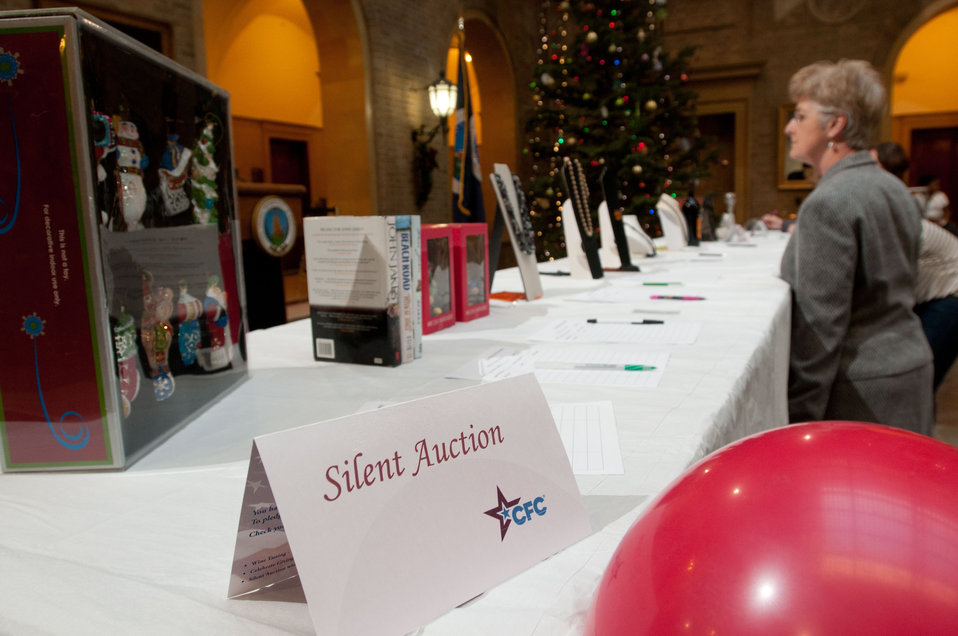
People consider items available at the silent auction, during the Combined Federal Campaign (CFC) fundraiser at the U.S. Department of Agriculture (USDA) headquarters, on Monday Dec. 3, 2012, in Washington, D.C. The event featured a 'Pie Smash” event where attendees, on personal time, donate money to throw non-dairy whipped 'cream' pies at Agriculture leadership. Other fund raising activities at this event included a silent auction, candy packets, bake sale, and pulled-pork sandwich lunches for donations. Additionally, information tables for Red Cross and Canine Partners for Life provided people with answers about the organizations and how to participate.